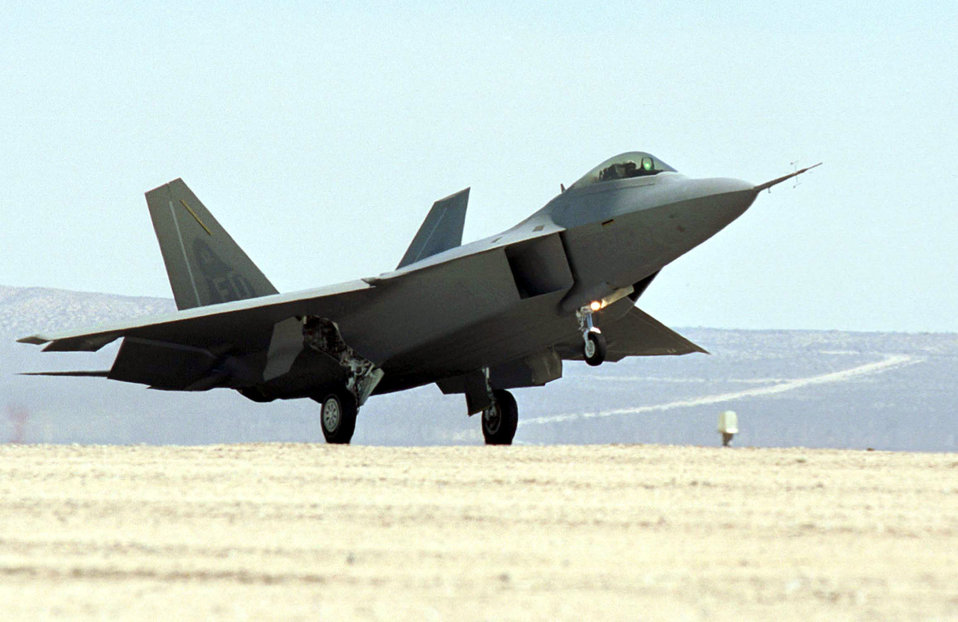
Touch down

FILE PHOTO -- The F/A-22 Raptor successfully completed the 16th load static test recently. There are three more tests left in the process to certify the strength of the Raptors airframe.